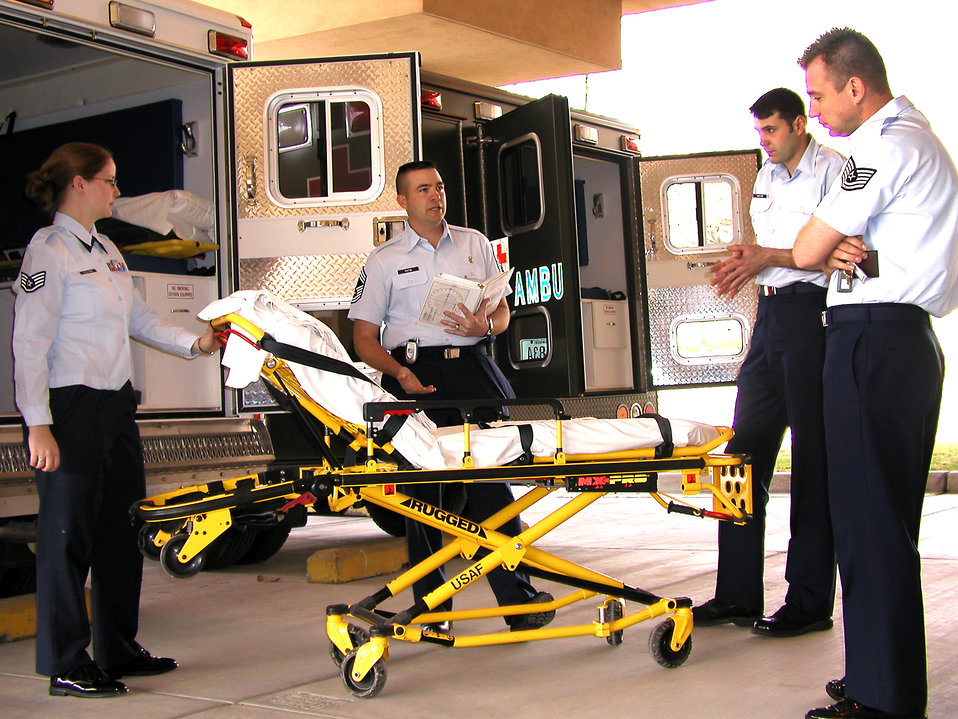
AFIA's health services inspections demystified

KIRTLAND AIR FORCE BASE, N.M. -- Chief Master Sgt. Joseph Potts (center) evaluates an ambulance crew's ability to operate equipment during a recent health services inspection. He is an Air Force Inspection Agency inspector here.